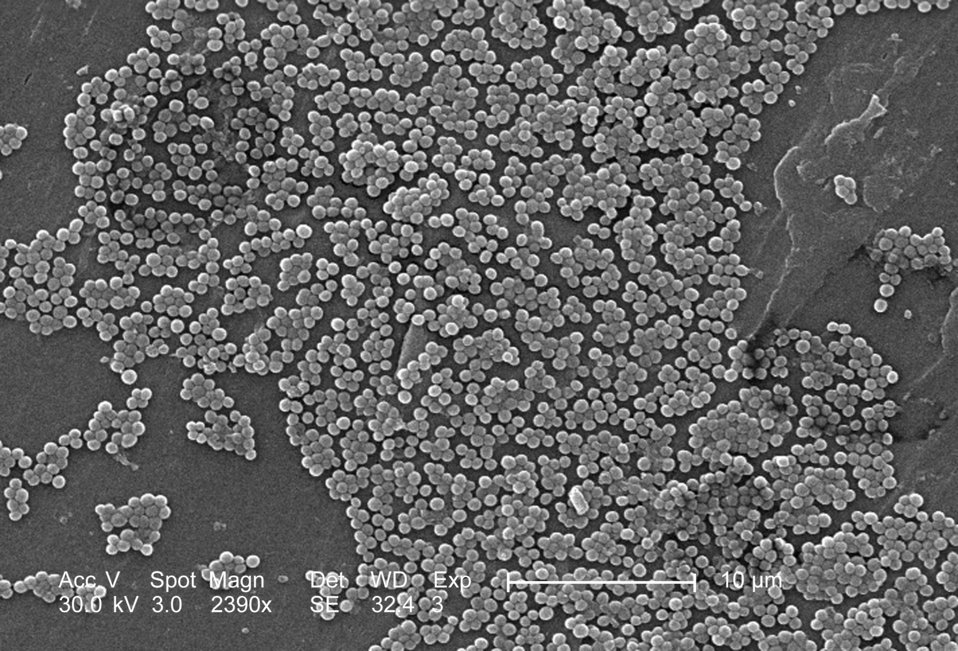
This 2005 scanning electron micrograph (SEM) depicted numerous clumps of methicillin-resistant Staphylococcus aureus bacteria, commonly referred to by the acronym, MRSA; Magnified 2390x. Recently recognized outbreaks, or clusters of MRSA in community settings have been associated with strains that have some unique microbiologic and genetic properties, compared with the traditional hospital-based MRSA strains, which suggests some biologic properties, e.g., virulence factors like toxins, may allow the community strains to spread more easily, or cause more skin disease. A common strain named USA300-0114 has caused many such outbreaks in the United States. Please see PHIL 10047 for a colorized version of this image.